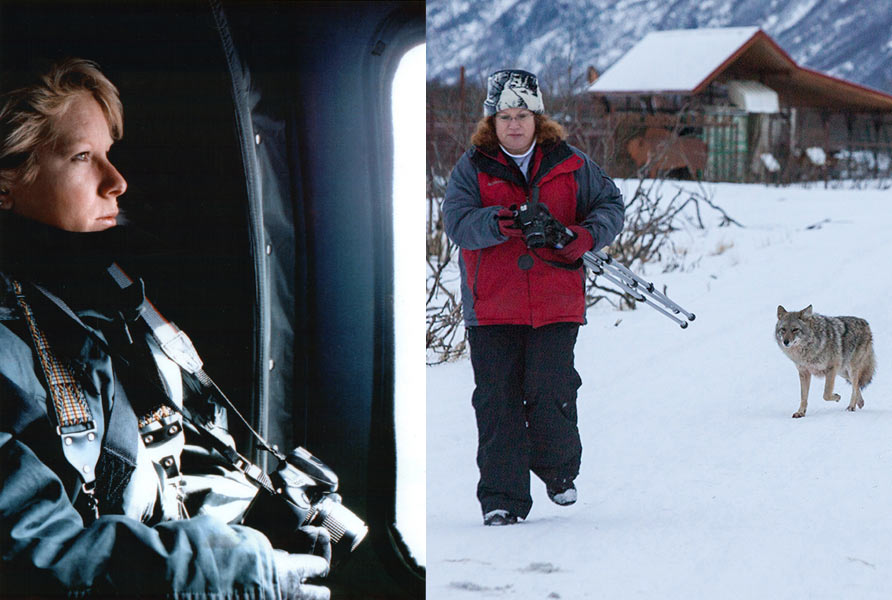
Laura Whitehouse-Alaska Region

Laura L. Whitehouse, an Outreach Specialist in the Office of Subsistence Management, served in the Air Force.